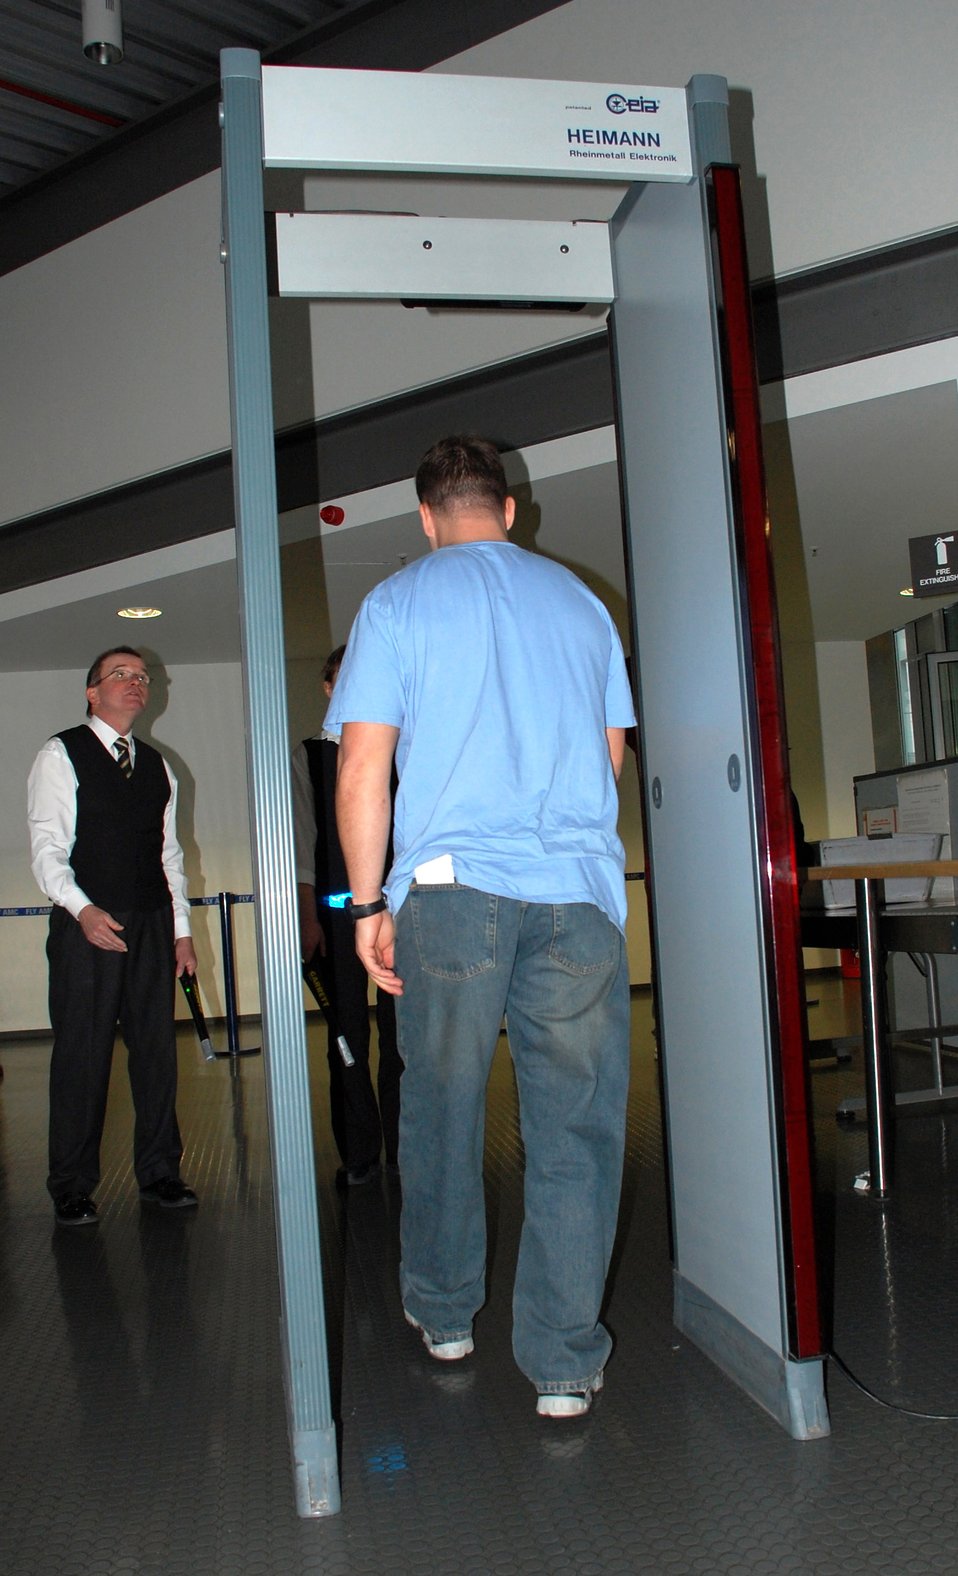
Ramstein passenger terminal streamlines operation

A passenger walks through a metal detector on his way through a newly located security checkpoint at the Ramstein Passenger Terminal Jan. 18 at Ramstein Air Base, Germany. The metal detectors and carry-on baggage screening devices used to be at the front door of the terminal which caused long waits. The change is part of an Air Force Smart Operations for the 21st century initiative.